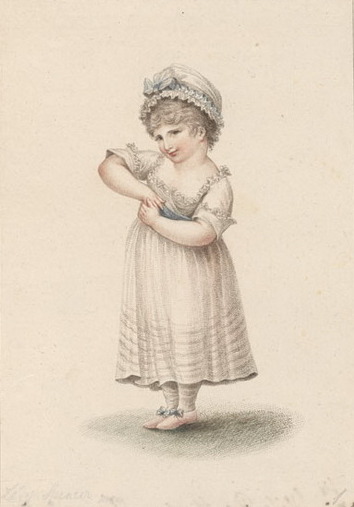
A little shy girl by BOVI (BOVA), MARIANO (MARINO) - GMII